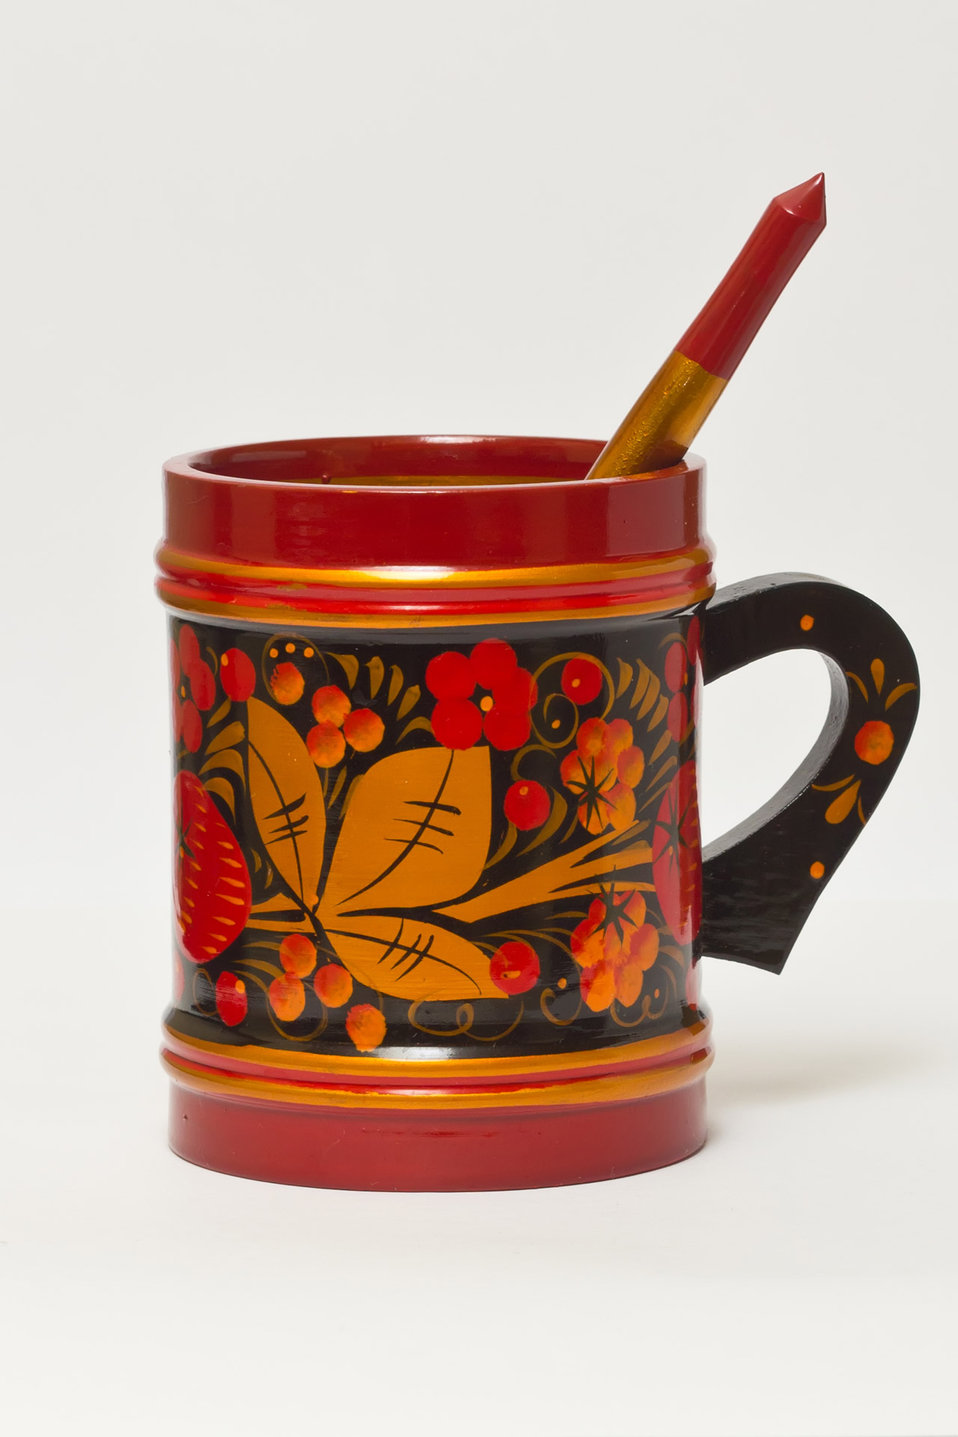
Khokhloma mug with spoon..